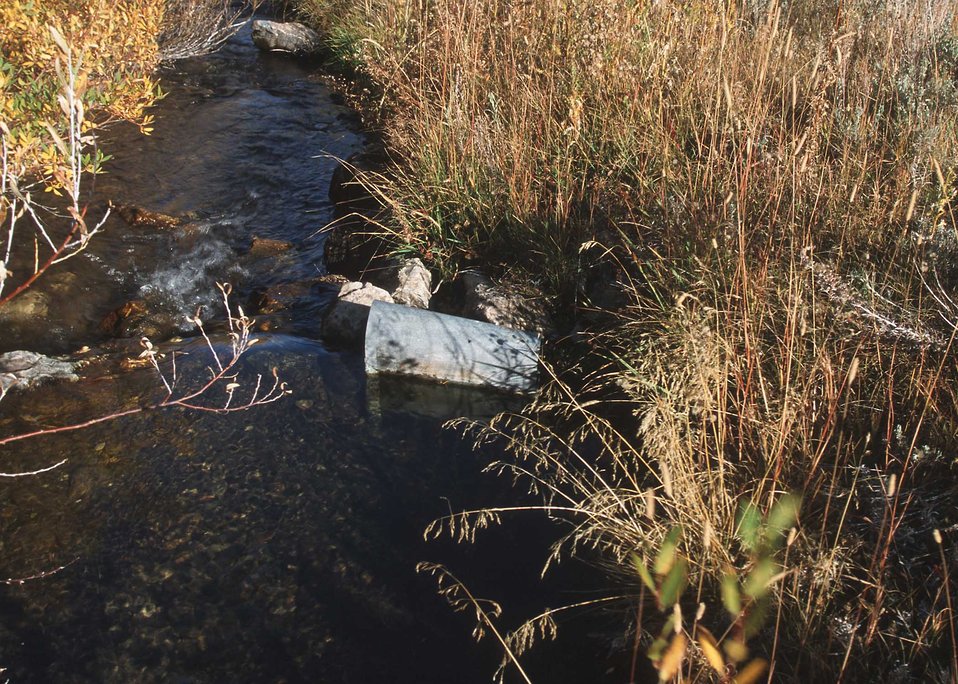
This area is part of a restored wetland in Colusa County, CA.